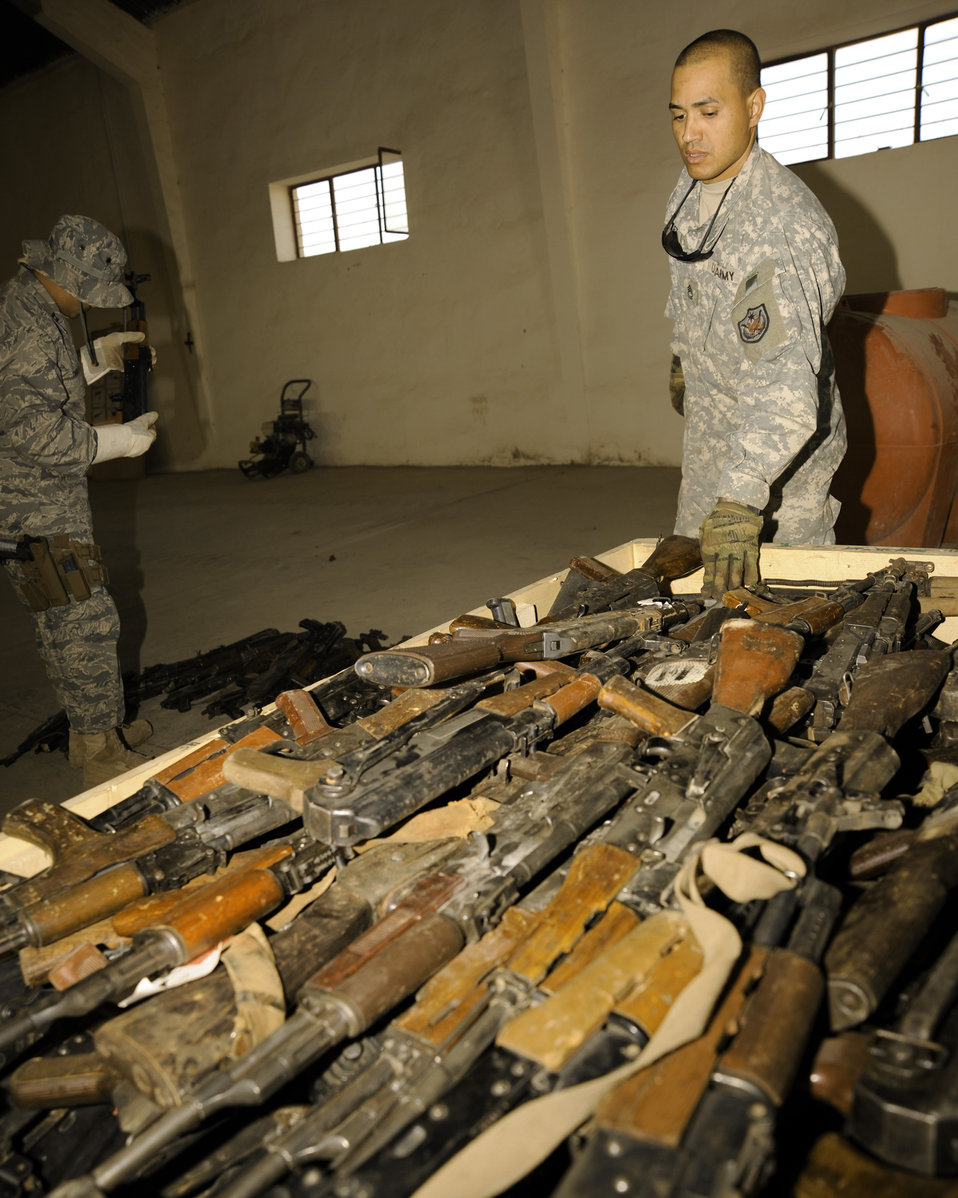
Airman leads team in managing enemy's weapons cache

Army Sgt. 1st Class Alejandro Jimenez places AK-47 rifles into a shipping crate at Taji Military Base, Iraq. The captured enemy weapons are accounted for and then shipped out to be destroyed. Sergeant Jimenez is the Multinational Security Transition Command-Iraq J4 collective weapons point NCO in charge. He is a Patchogue, N.Y. native.